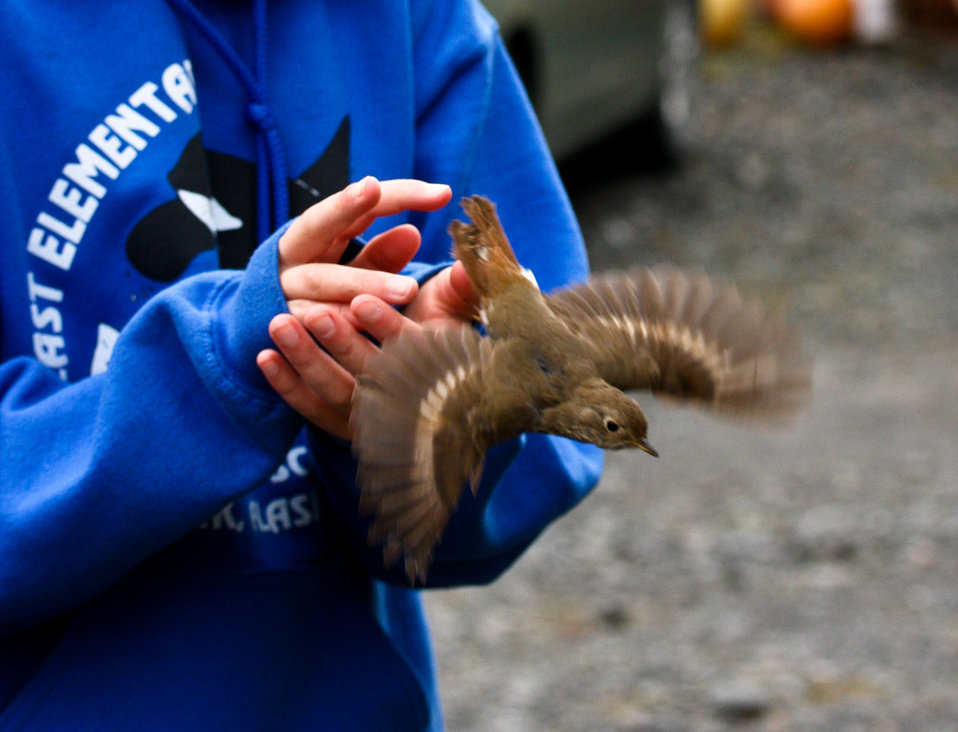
2012-Kodiak-Serve

Hermit Thrush and volunteer at a bird banding session.
Lisa Hupp/USFWS